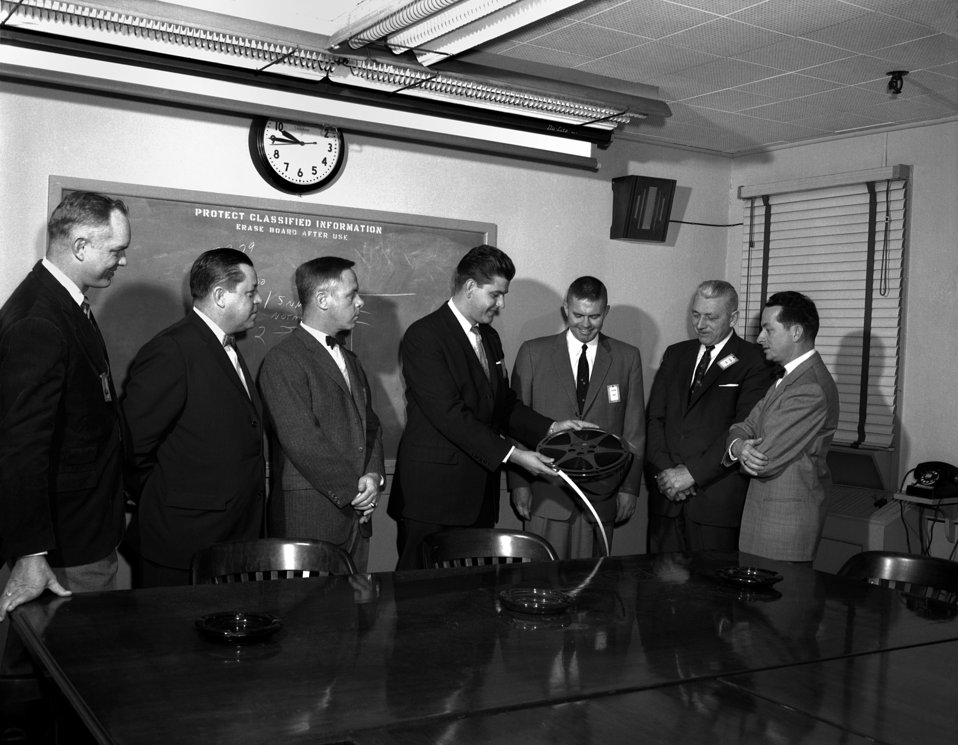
Manager's Office Sapirie and Crew Oak Ridge

60-0090a DOE photo by Ed Westcott

Manager's Office Sapirie & Crew from SS Savanah A.F. Capt. Ronald E. Anderson-ORO, Capt. James Gregory, Capt. William W. Meyer, Capt. August J.C. Egle, Capt. Theodore Blanckenburg, Capt. Gaston R. DeGroote and Dent C. Davis Jr. ORO Oak Ridge Tennessee 2/8/1960